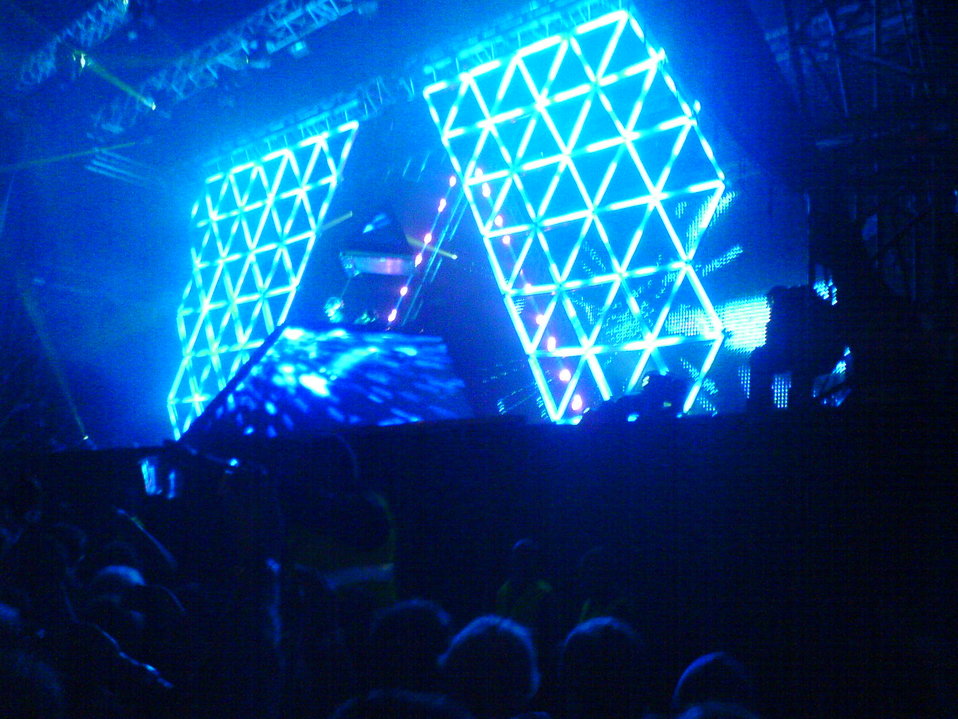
1337 Daft Punks went to this concert.